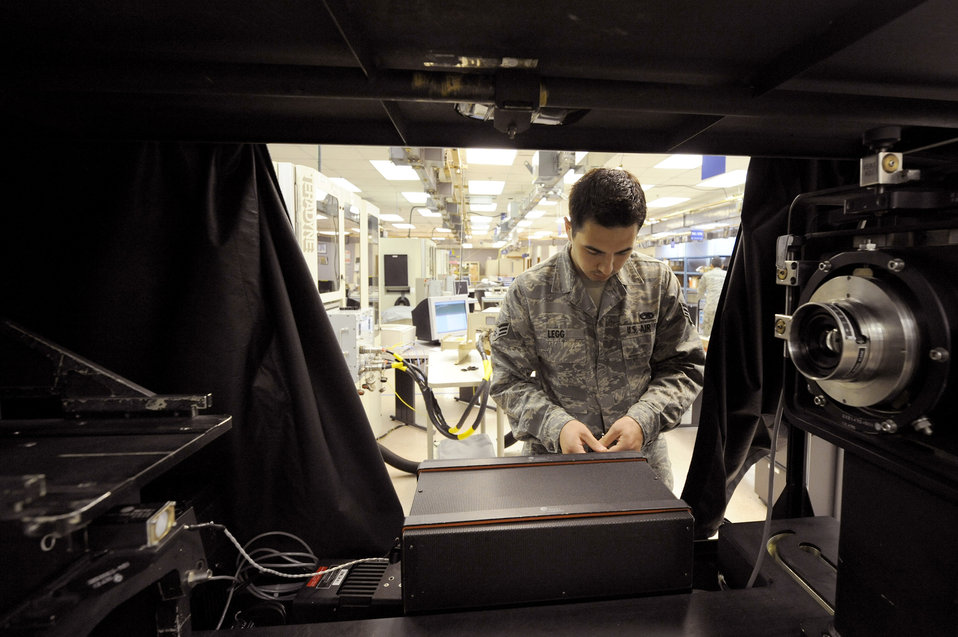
Avionics of Excellence

Senior Airman Keiron Legg sets up a display unit test set to run an operations test on a C-17 Globemaster III heads-up display unit May 25, 2010, at Joint Base Charleston, S.C. Airman Legg is a test station and components journeyman with the 437th Maintenance Squadron.